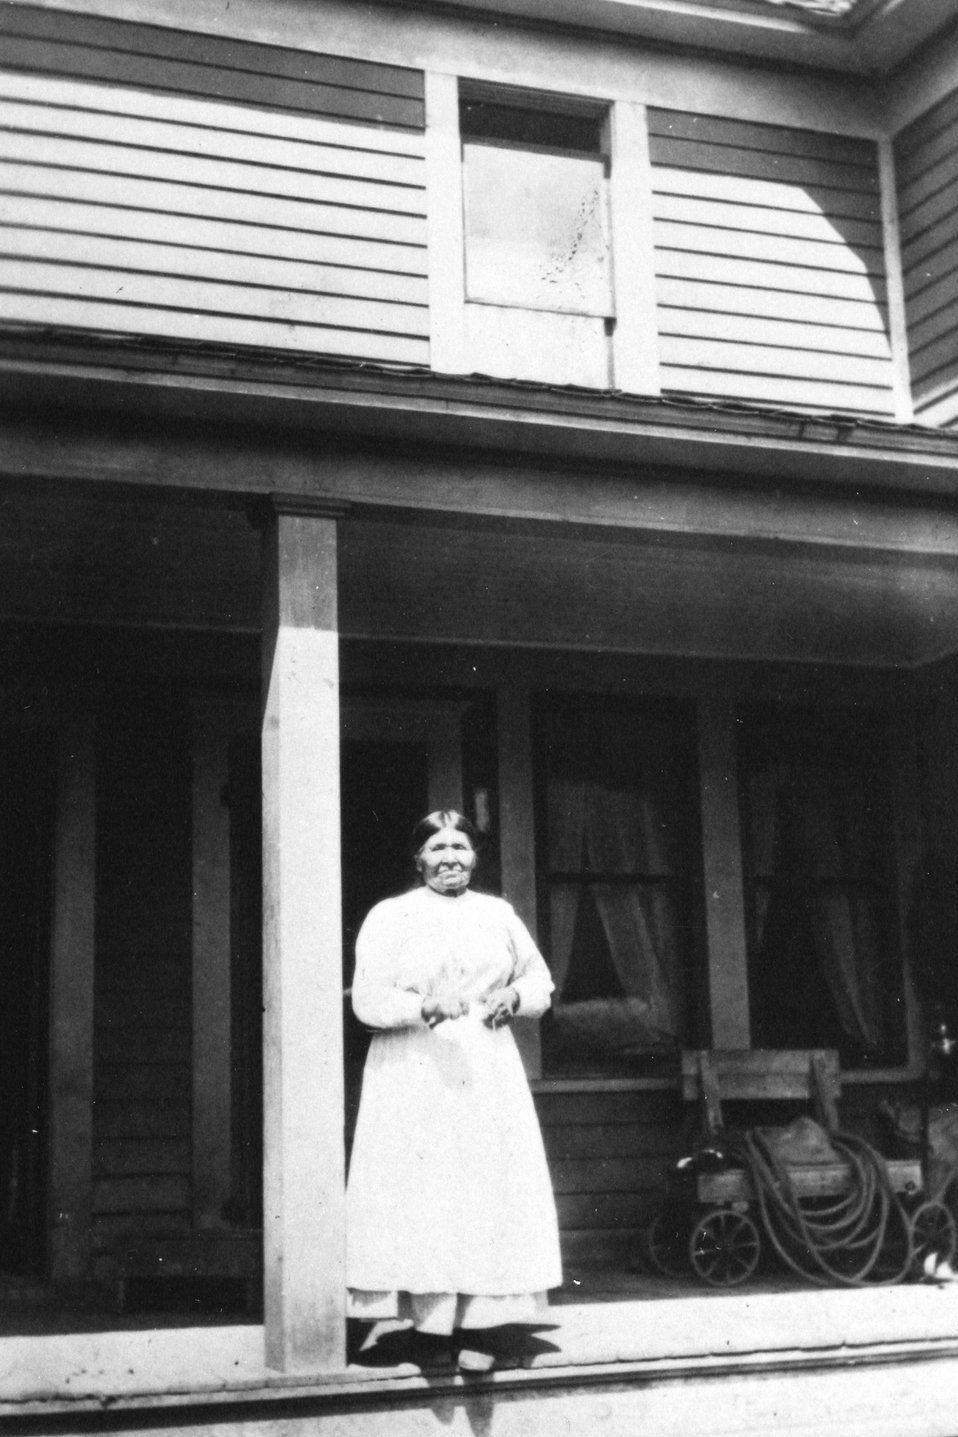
Adeline Billings at the Big Meadows C. 1915